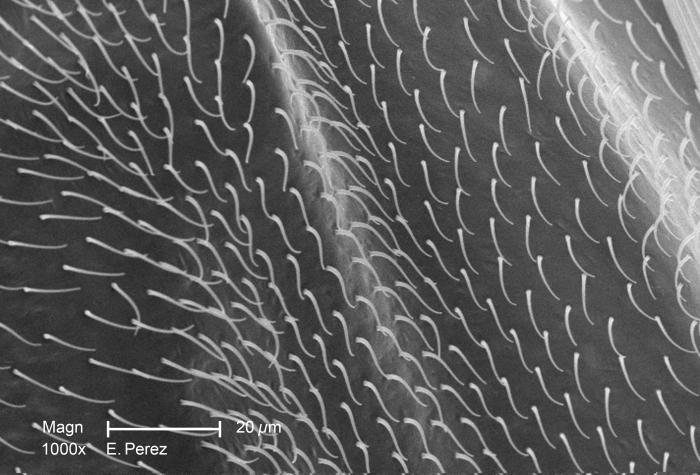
At a magnification of 1000X, twice as great as that of PHIL 10516, this scanning electron micrograph (SEM) reveals the presence of numerous sensorial 'hairs', or setae, and striated scales found on the surface of one of two wings of an unidentified mosquito discovered in the suburbs of Decatur, Georgia. Note that PHIL 10518 depicts these morphologic features in even greater detail.